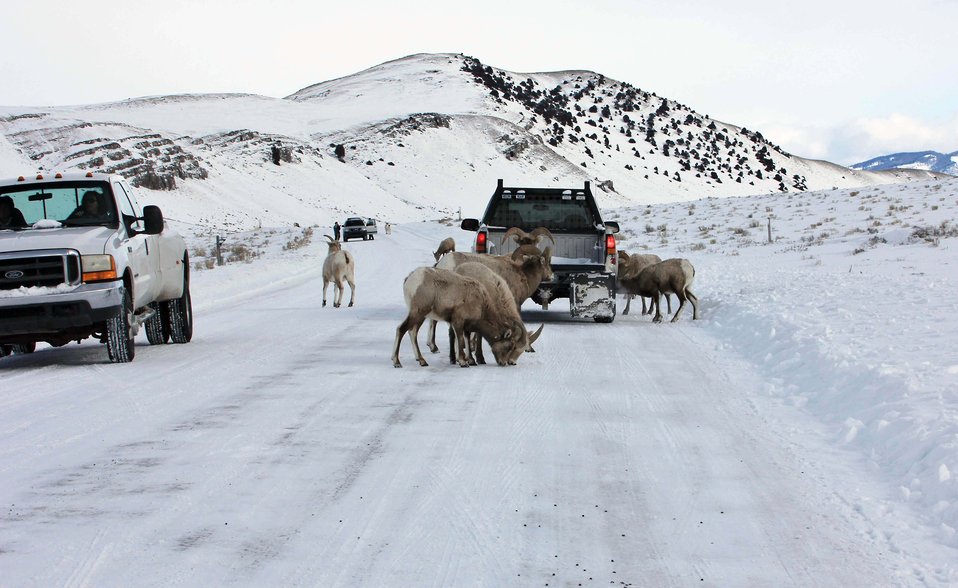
Up Close and Personal

The bighorn sheep can be quite assertive on the Refuge Road, licking vehicles as well as the road surface itself.

Credit: USFWS / Ann Hough, National Elk Refuge volunteer